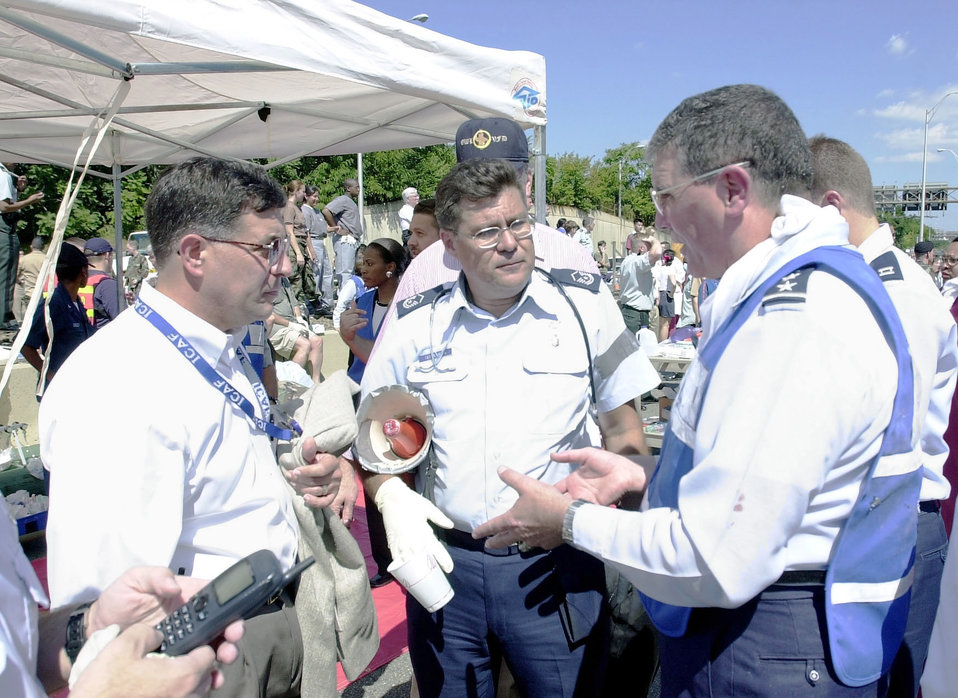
Pitching in

WASHINGTON -- Pentagon military and civilian workers pitched in to help where needed after a highjacked commercial jetliner plowed into the Pentagon on Sept. 11, 2001. Military and civilians aided rescue work by carrying stretchers with injured people to waiting ambulances. The Pentagon crash followed an attack on the twin towers of the World Trade Center in New York City in one of the worst terrorist actions in history.